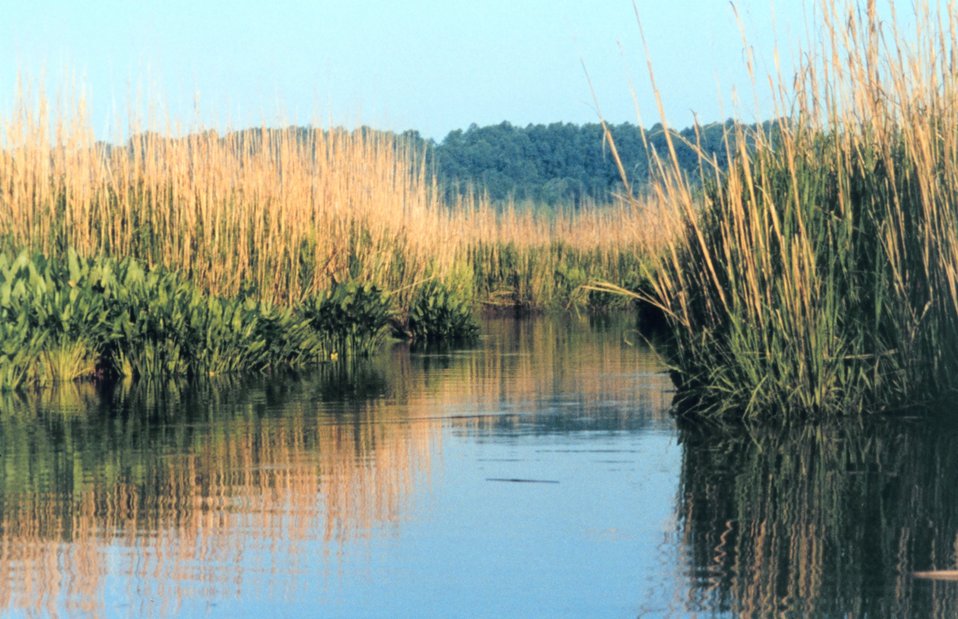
Arrow arum (the broadleaf plant) and saltmarsh cordgrass (spartina alternaflora)